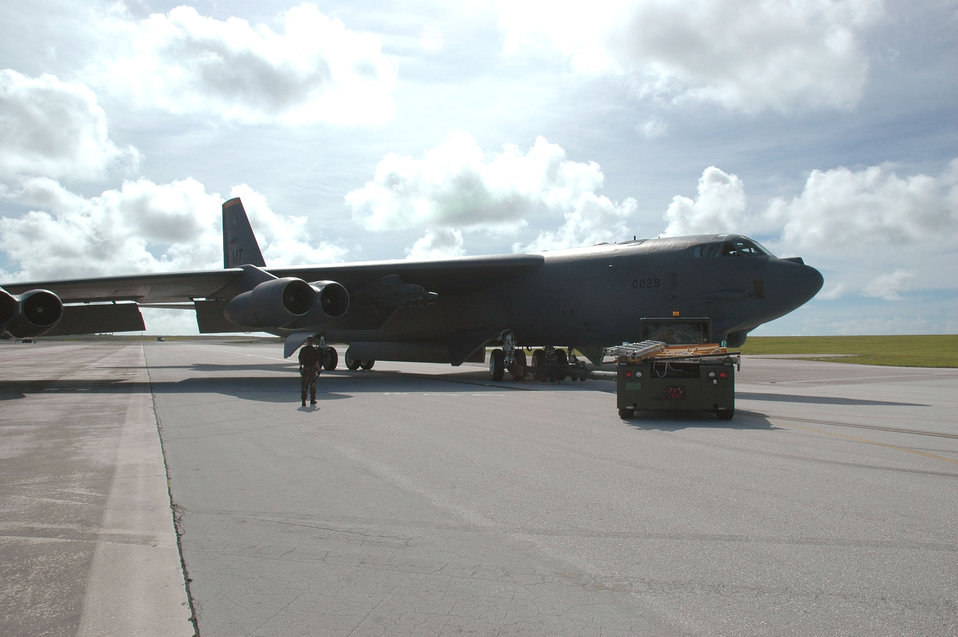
Deployed B-52 maintainers achieve perfect record

Maintainers from the 36th Expeditionary Aircraft Maintenance Squadron park a B-52 Stratofortress Sept. 21 at Andersen Air Force Base, Guam, after a mission. The squadron has achieved 100 percent mission effectiveness and 100 percent weapons release rates since arriving in September. They are deployed to Andersen AFB as part of the United States' commitment to keeping a continuous bomber presence in the Pacific region.